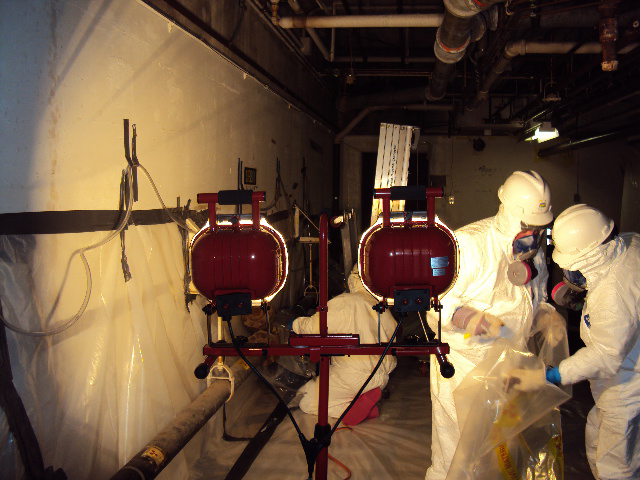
Argonne Forges Ahead in Waste Removal, Facility Demolitions with Recovery Act Help

With the help of $79 million from the Recovery Act, Argonne National Laboratory continues to dramatically reduce its inventory of radioactive materials and waste while making significant progress in its decontamination and demolition (D&D) program.